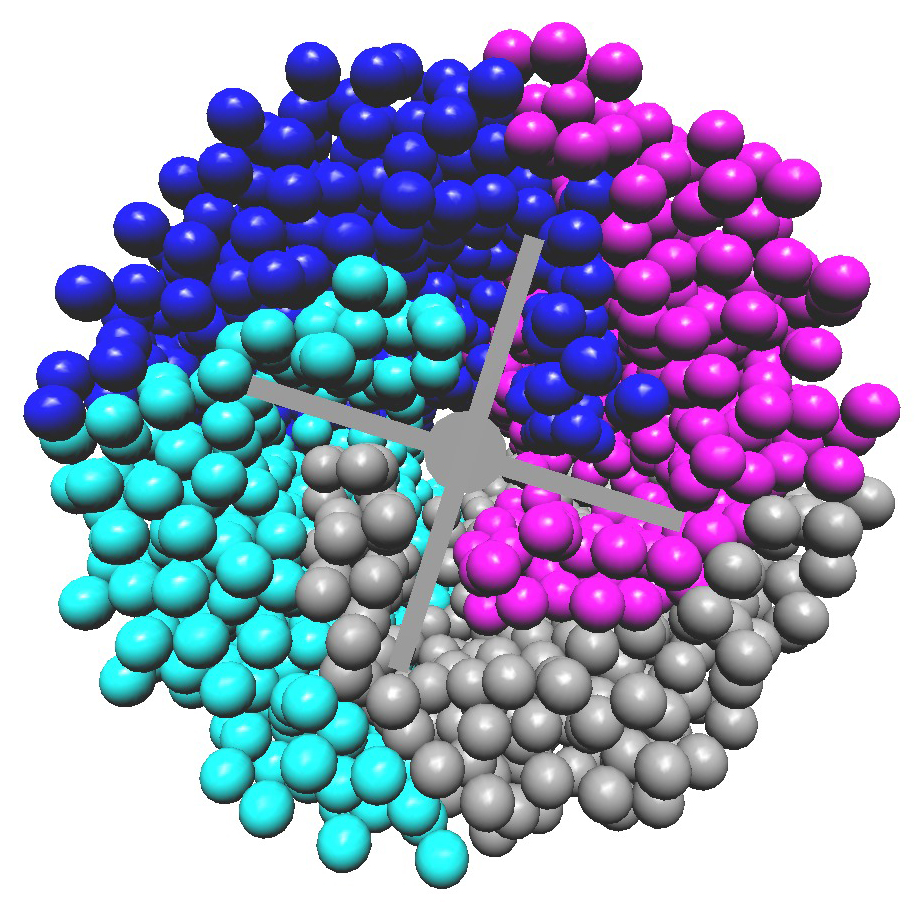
Supercomputing; Concrete

This simulation depicts flow in a rheometer, as its rotating vane's blade begins to stir a suspension of particles. Colors represent the quadrant where the particles are initially positioned. Such simulations can be used to link measurements of torque and angular velocity to fluid properties like viscosity, and they also can provide insight into physical mechanisims that control particle dispersion and mixing.